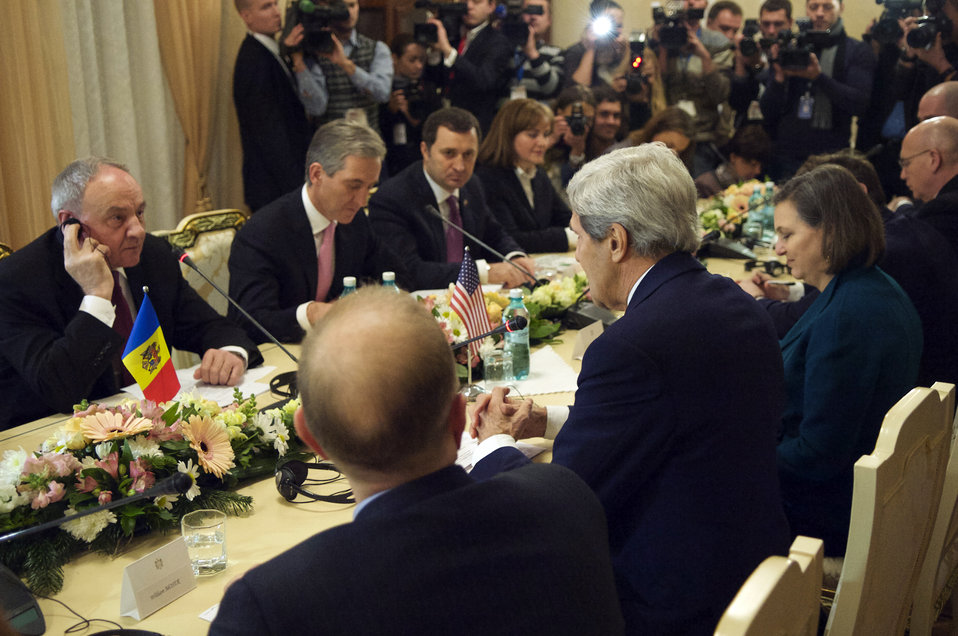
Secretary Kerry Addresses Moldovan President Timofti

U.S. Secretary of State John Kerry addresses Moldovan President Nicolae Timofti, left, and Prime Minister Iurie Leanca, second from left, to start a bilateral meeting at the Presidential Residence in Chisinau, Moldova, on December 4, 2013.